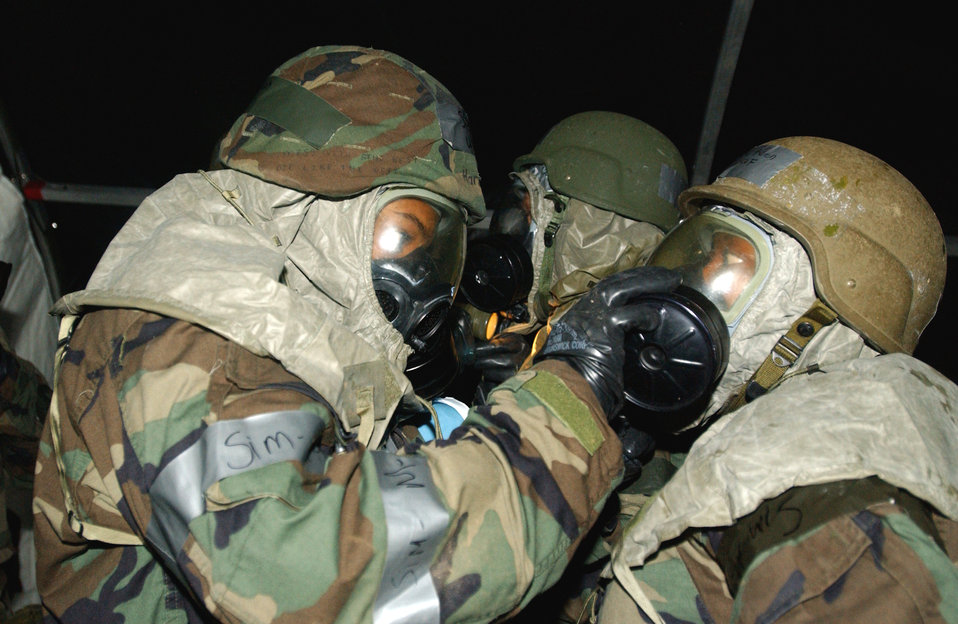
Medics train to be combat-ready

Capt. Karen Lugg and Staff Sgt. Qiana Dixon conduct a buddy check during combat medical readiness training on Thursday, April 27, 2006, at Aviano Air Base, Italy. The training prepares Airmen for deployments and rapid response in emergency situations. Captain Lugg is with the 31st Medical Operations Squadron and Sergeant Dixon is with the 31st Medical Group.